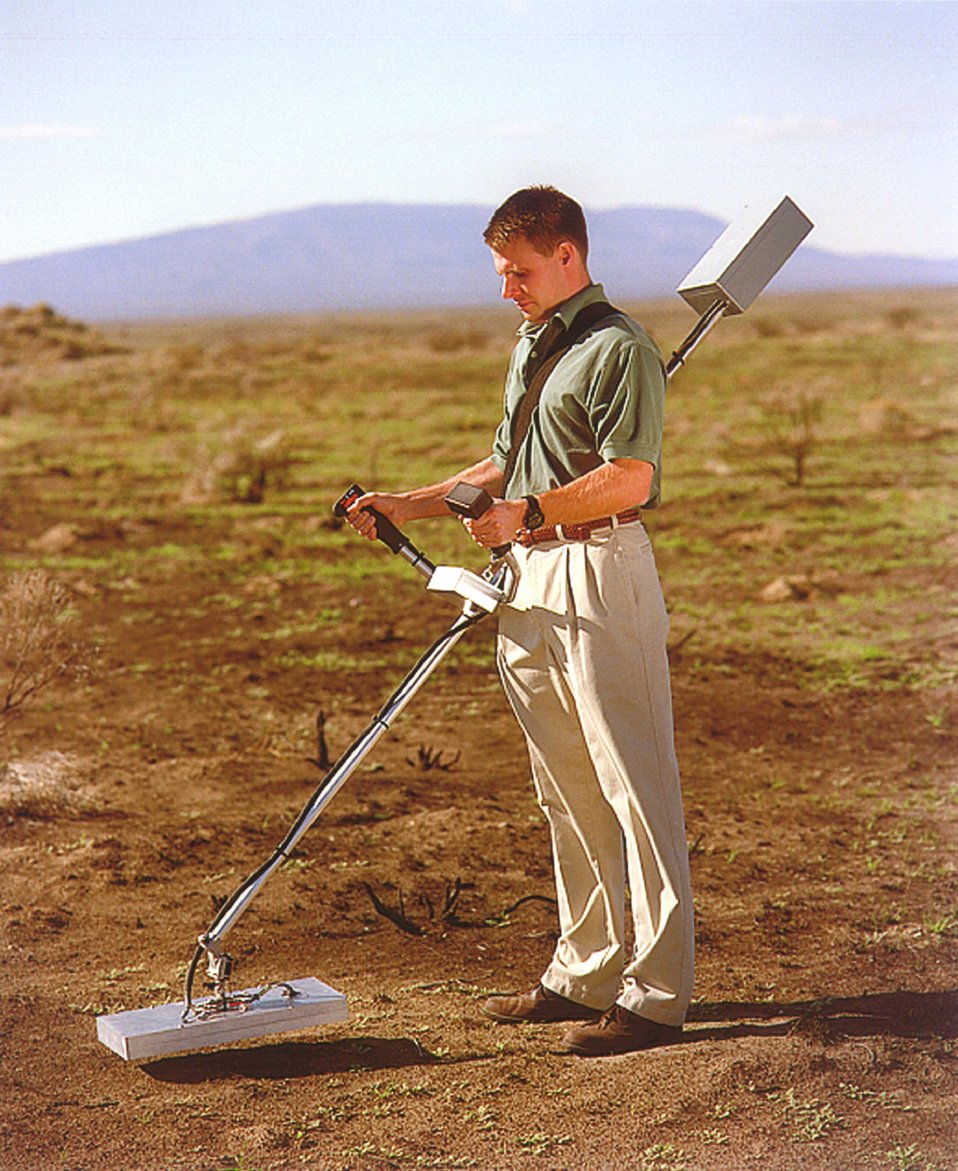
PNNL ENGINEER TESTING THE TIMED NEUTRON DETECTOR, A DEVICE THAT DETECTS LAND MINES.

THE TIMED NEUTRON DETECTOR RECEIVED AN AWARD AS PART OF THE ANNUAL DISCOVER MAGAZINE INNOVATION AWARDS, 2001.